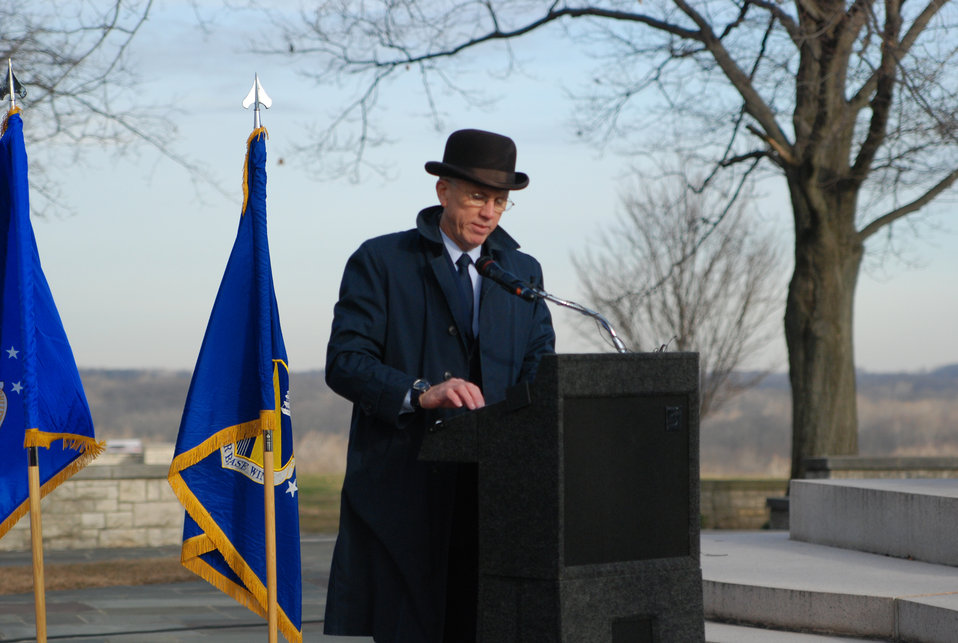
Wright Brothers

After donning a costume reminiscent of the turn of the century, Brig. Gen. Paul Sampson tells the story of Dayton, Ohio's most famous inventors, Wilbur and Orville Wright, during a ceremony Dec. 17, 2009, at Wright-Patterson Air Force Base, Ohio. The general was keynote speaker for a ceremony marking the 106th anniversary of the Wright brothers' first powered flight. Brig. Gen. Sampson is mobilization assistant to the commander of Aeronautical Systems Center.